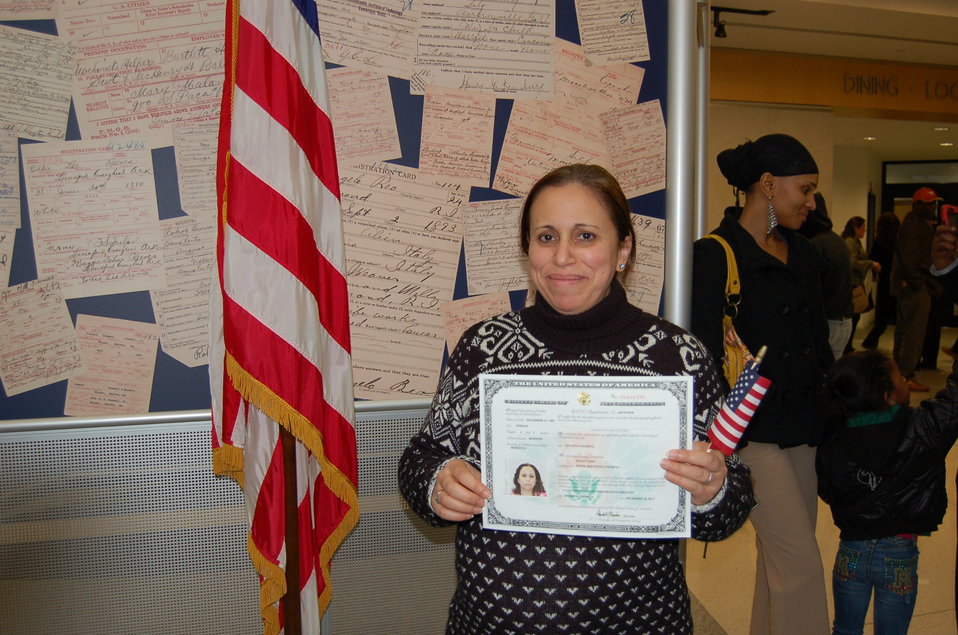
New Citizens